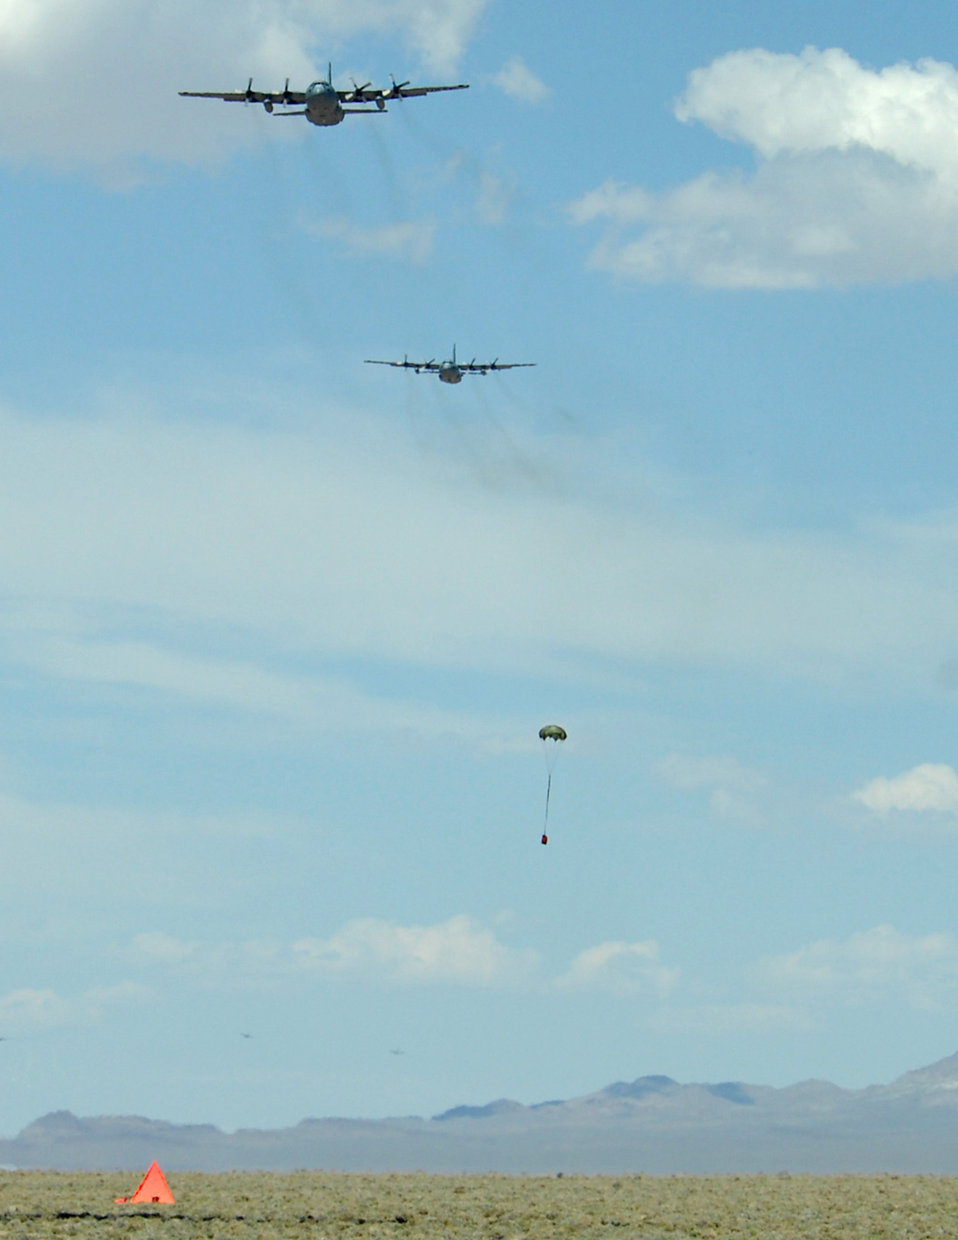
Testing mobility forces

Two C-130 Hercules participating in the Mobility Air Forces Exercise make a pass over the drop zone May 20 at the Nevada Test and Training Range near Nellis Air Force Base. Approximately 12 U.S. Air Force bases participate in the exercise at the U.S. Air Force Weapons School twice a year, testing the crew ability of C-17 Globemaster IIIs and C-130s to join together in formation at a specific time and location to drop a brigade-size force anywhere in the world.